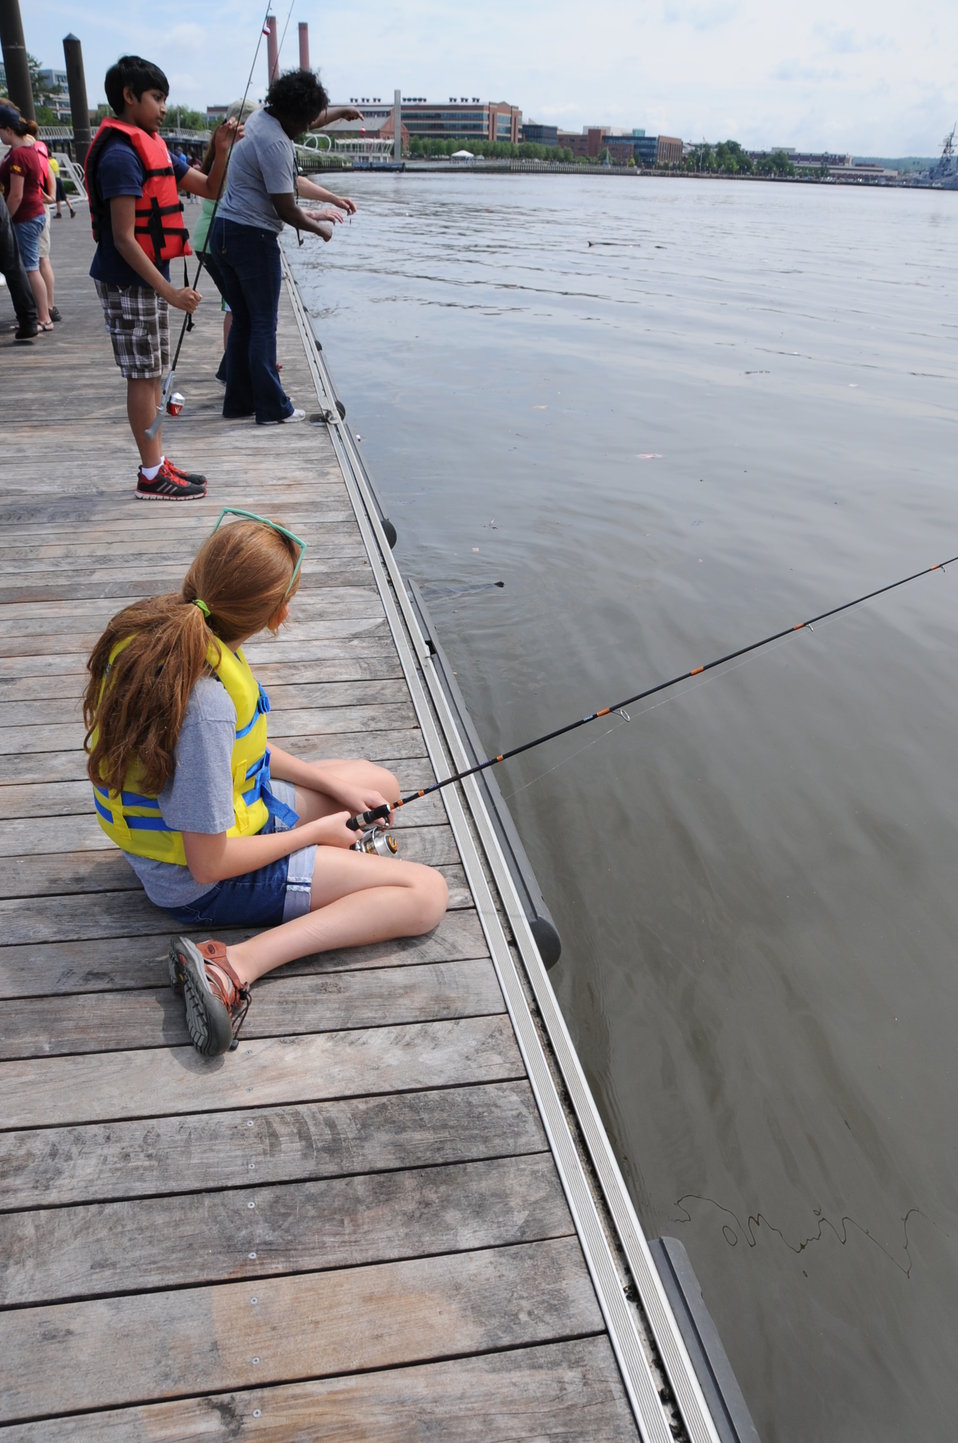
2013 National Fishing and Boating Week

Local students prepare to enjoy fishing at the annual kick-off of National Fishing and Boating Week on the Anacostia River in Washington D.C.